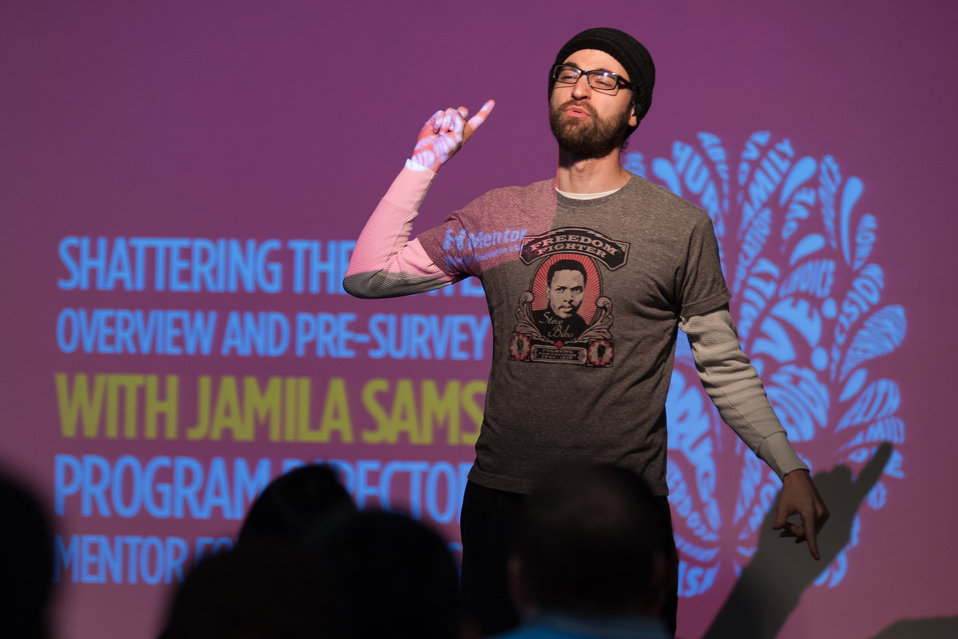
Mentor NDFW Event 2014

Mentor Foundation USA, in partnership with the National Institute on Drug Abuse (NIDA) and other key partners hosted a Youth Drug Facts Rally at the House of Sweden on Thursday, 30th January 2014. Approximately 200 students from five local high schools attended and had the opportunity to interact with top U.S. scientific experts, and inspiring guest speakers to “shatter the myths” about drugs and substance abuse, while pledging to stay drug-free.